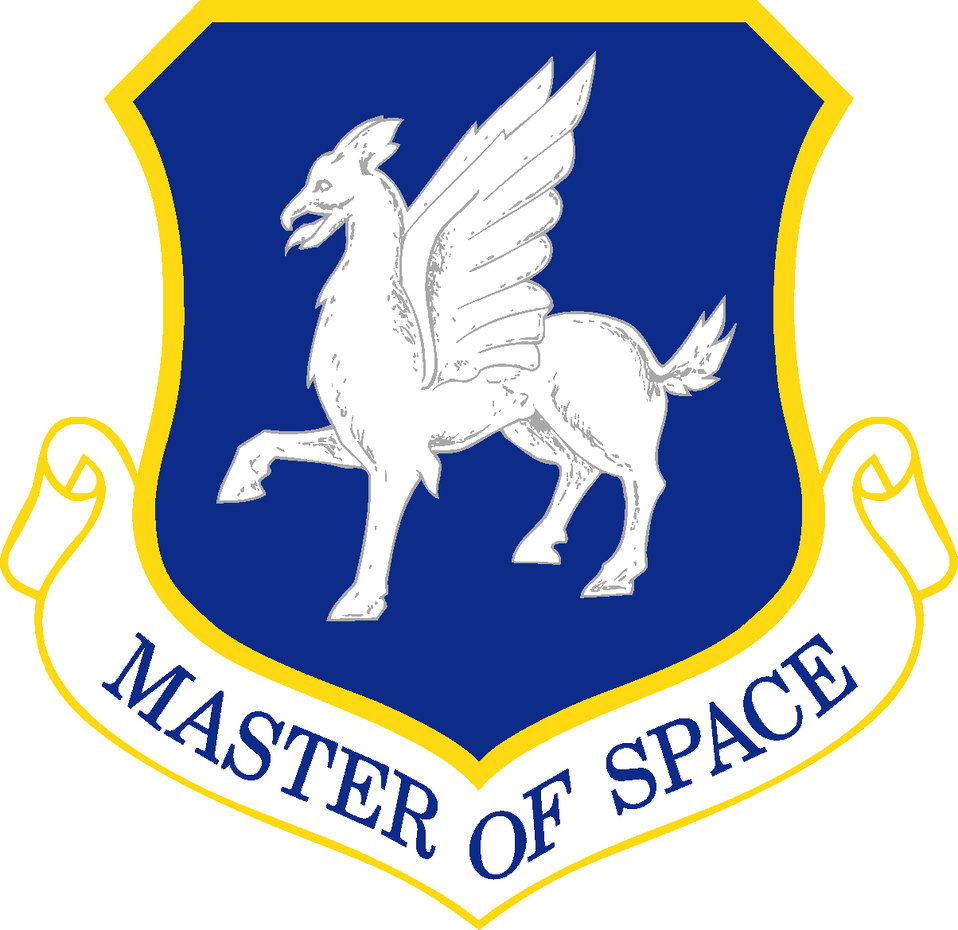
50th Space Wing shield